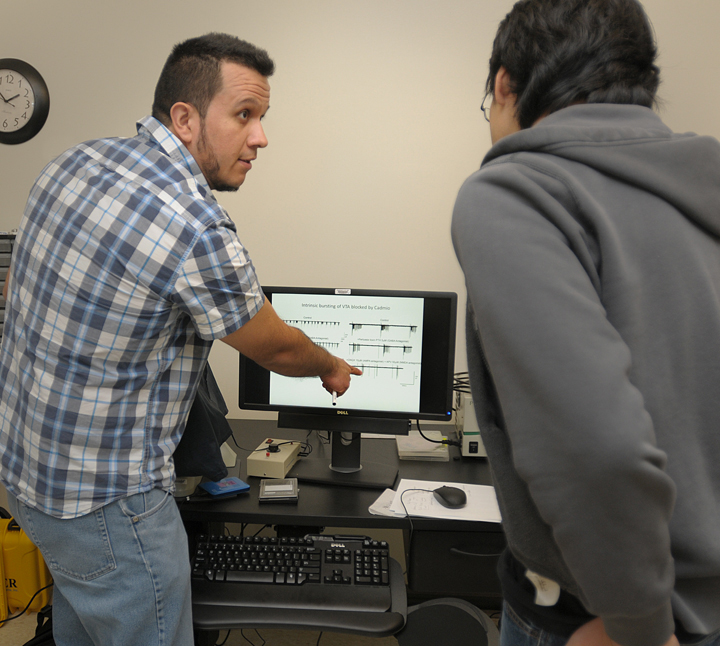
IRP Researcher

Postdoctoral fellow Dr. Jose Aceves Buendia explaining the firing pattern of NIDA newly discovered neurons in the ventral tegmental area.; Image Taken by Doug Hansen